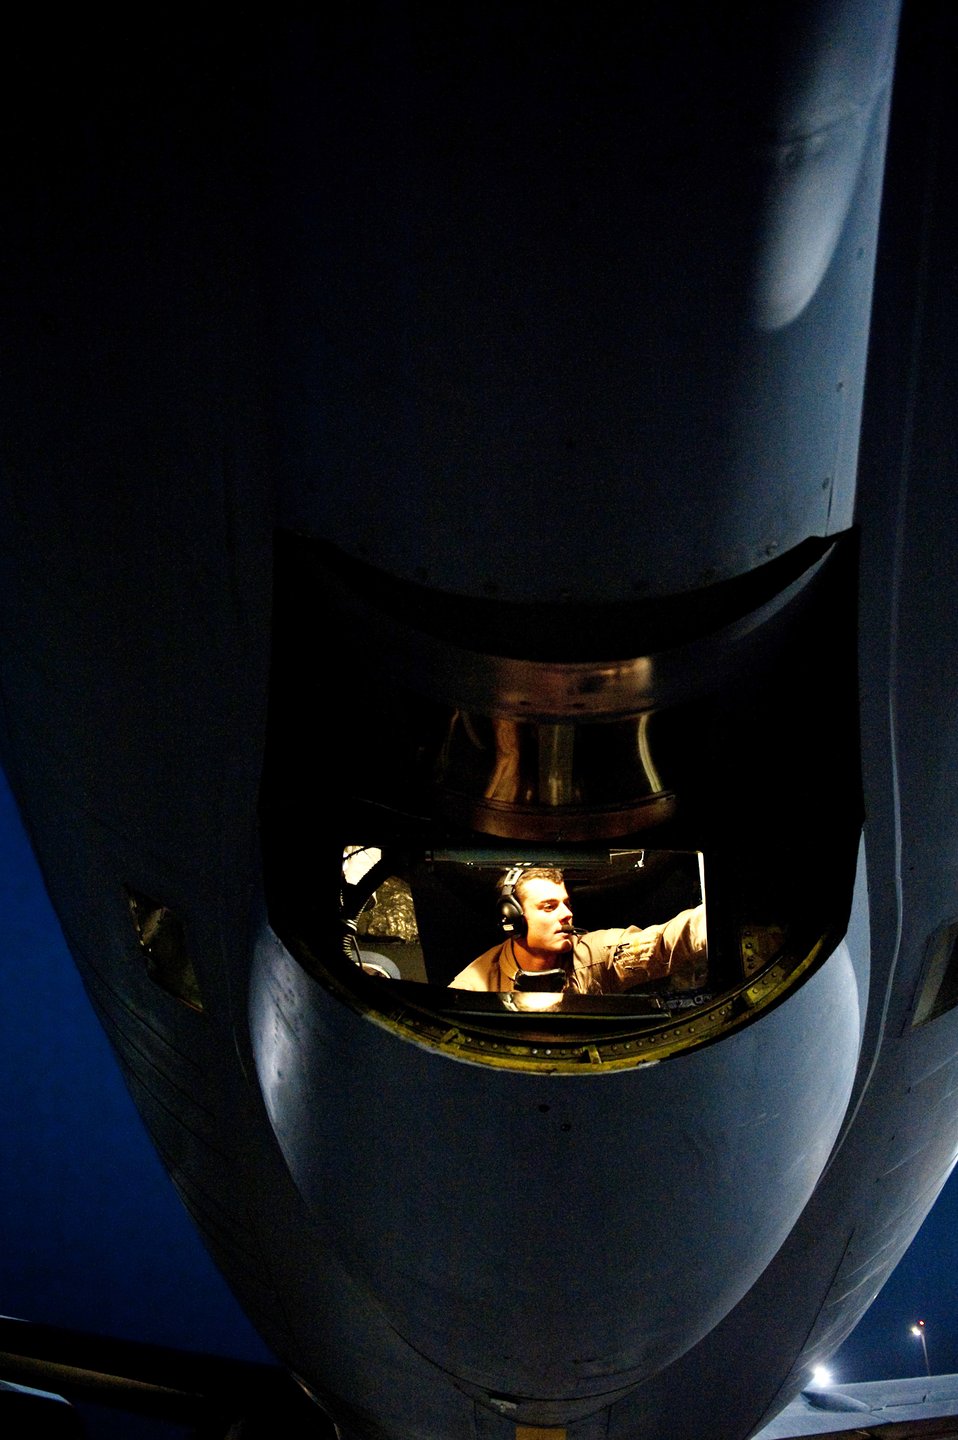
KC-135 crews prepare for mission

Senior Airman Andrew Deck, 340th Expeditionary Air Refueling Squadron boom operator, conducts a KC-135 Stratotanker preflight check, Dec. 2, 2009, in Southwest Asia.